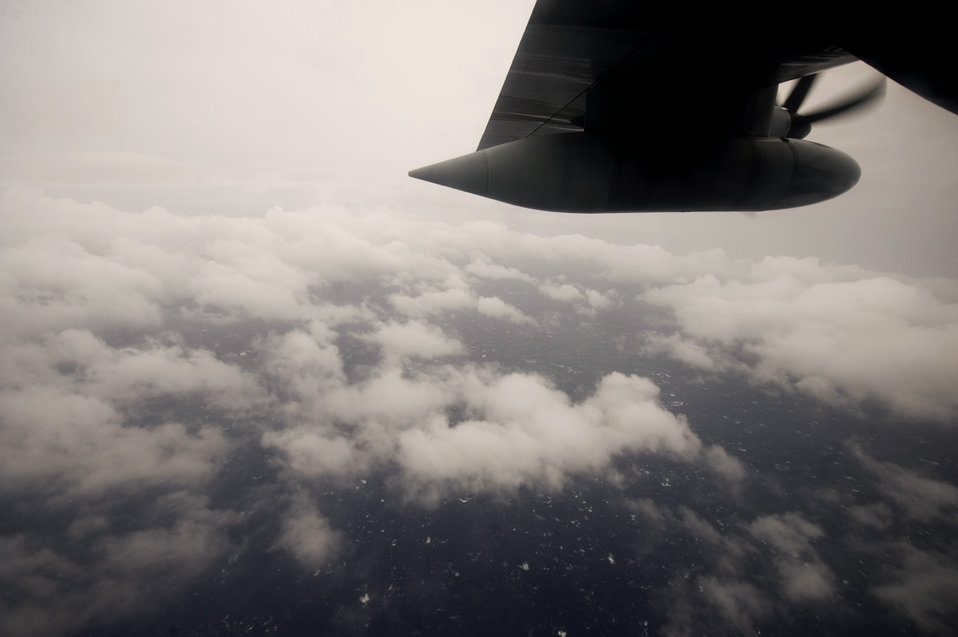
Hurricane Hunter

As day breaks over the Gulf of Mexico June 29, 2010, an opening in the clouds of Hurricane Alex allows the Hurricane Hunter aircrew aboard a WC-130J Hercules a brief glimpse of the water surface.